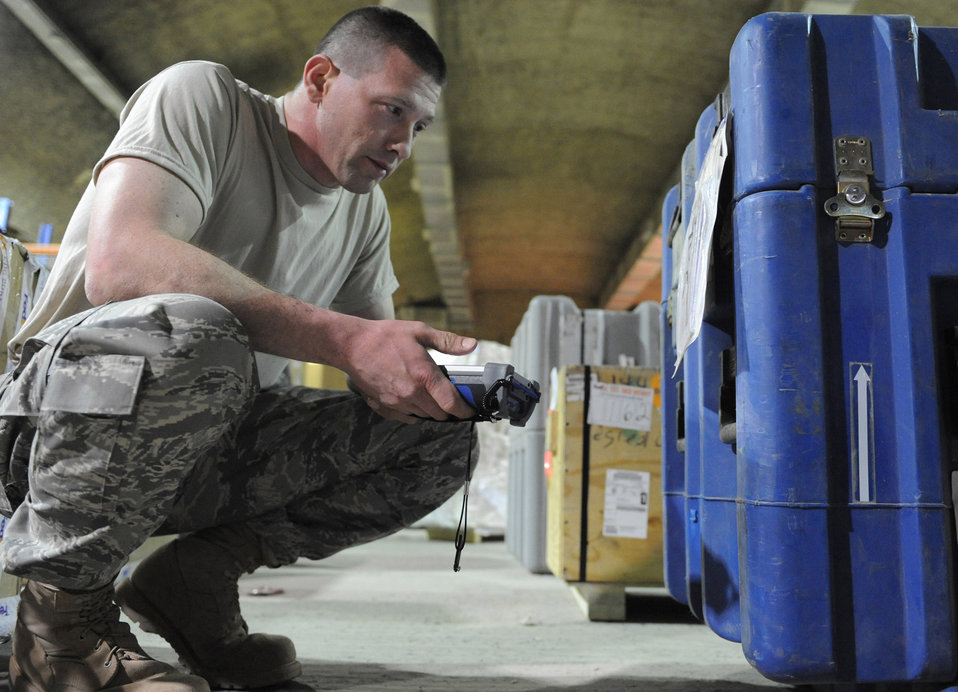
Making a list and checking it twice

Staff Sgt. Mark Garcia uses an electronic device linked to an inventory system to in-check cargo Feb. 17 at Joint Base Balad, Iraq. The traffic management office is responsible for in-checking Air Force cargo from five parcel carriers. Sergeant Garcia is assigned to the 332nd Expeditionary Logistics Readiness Squadron in-bound freight section and deployed from Salt Lake City Guard Base. He is a native of Ogden, Utah.